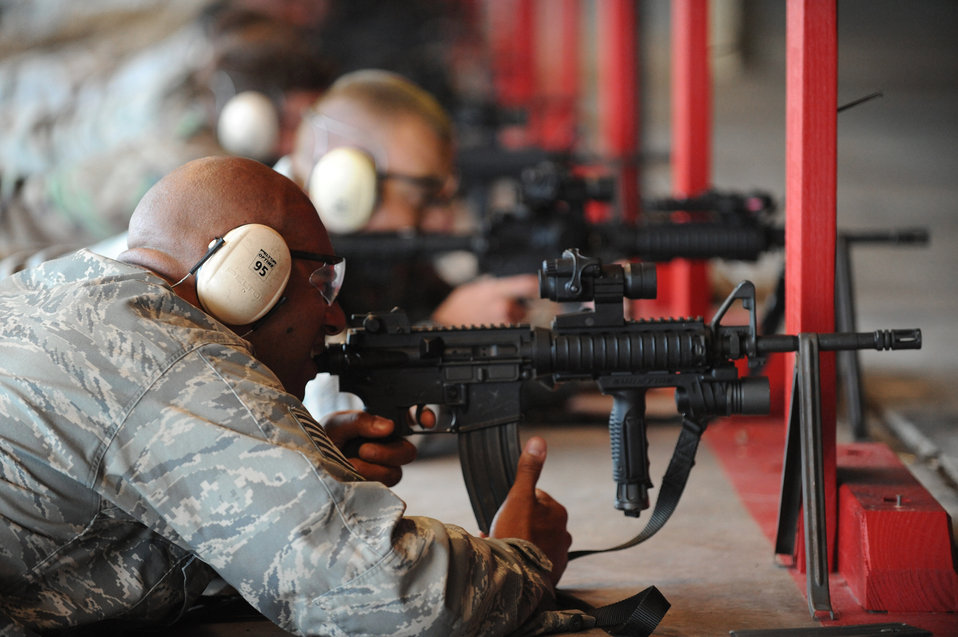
Locked on target

Tech. Sgt. Antonio Frese takes aim with an M-4 rifle June 21, 2010, on the improved weapons firing range at Joint Base Charleston, S.C. He is with the 628th Security Forces Squadron.